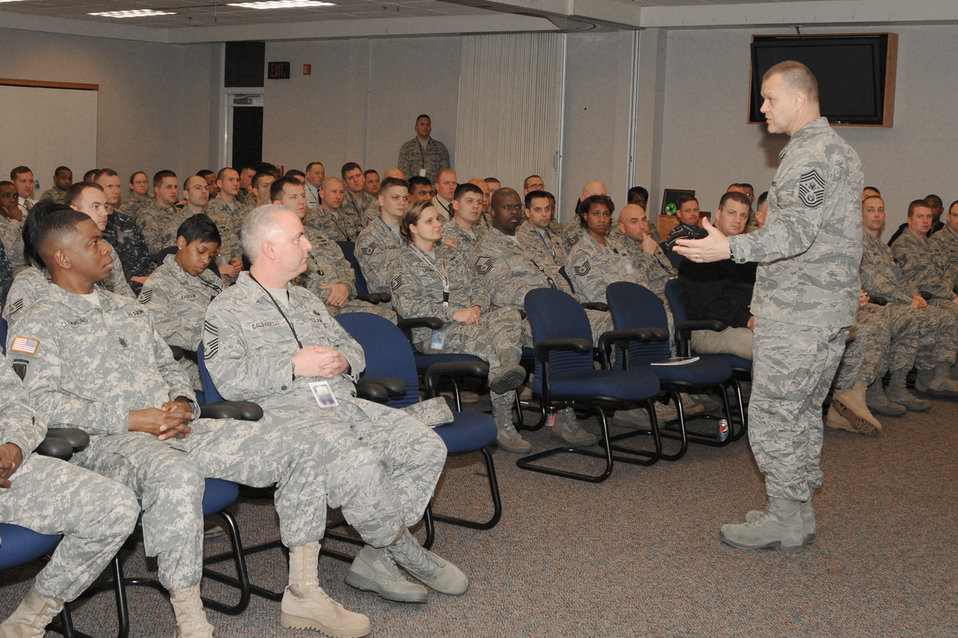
Chief Roy

Chief Master Sgt. of the Air Force James A. Roy addresses members of the White House Communications Agency during a visit to Joint Base Bolling-Anacostia, D.C.